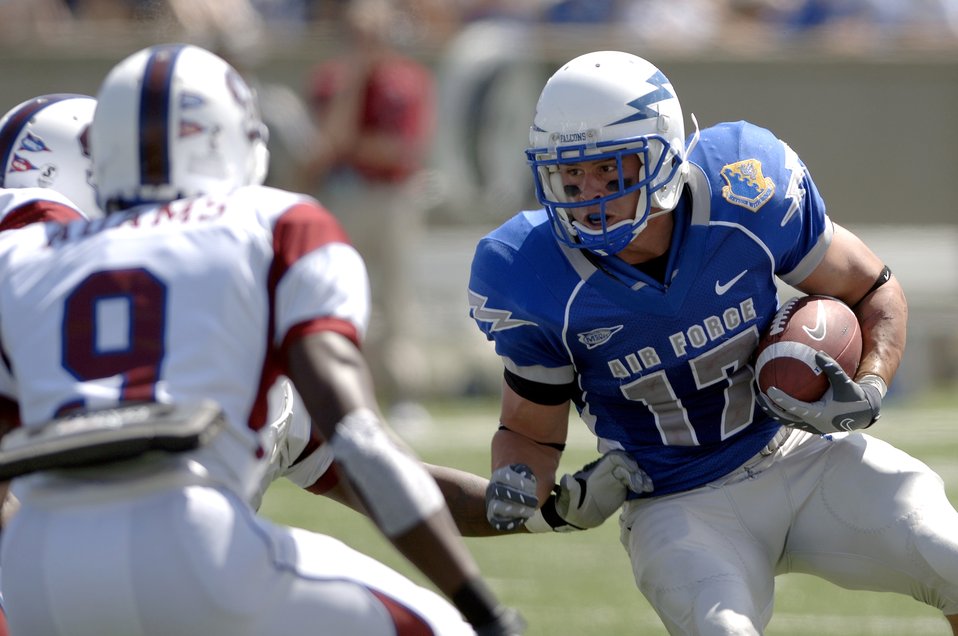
Calhoun era kicks off with 34-3 win

Air Force tailback Kip McCarthy faces South Carolina State corner back Phillip Adams, and others, Sept. 1 at Falcon Stadium. The Air Force senior rushed for a game-high 129 yards on 22 carries against the Bulldogs.